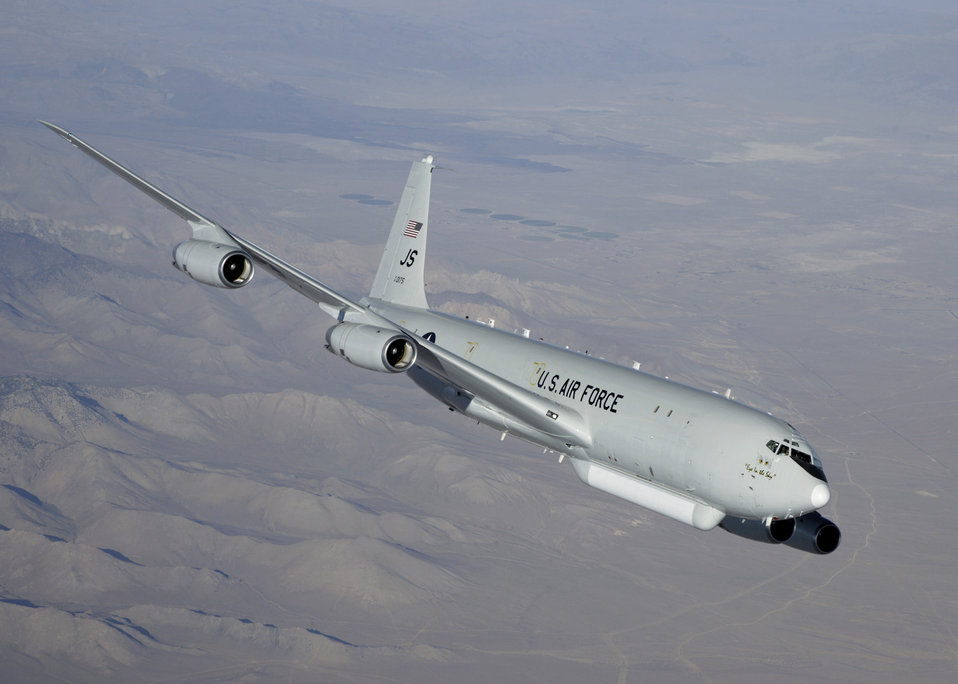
Joint STARS

The 751st Electronic Systems Group's E-8C Joint STARS test aircraft, T-3, performs flight testing with JT8D-219 engines during a December deployment to Edwards Air Force Base, Calif. In February, 633rd Electronic Systems Squadron officials awarded two major contract actions to continue the Joint STARS re-engining program's system design and development phase activities.